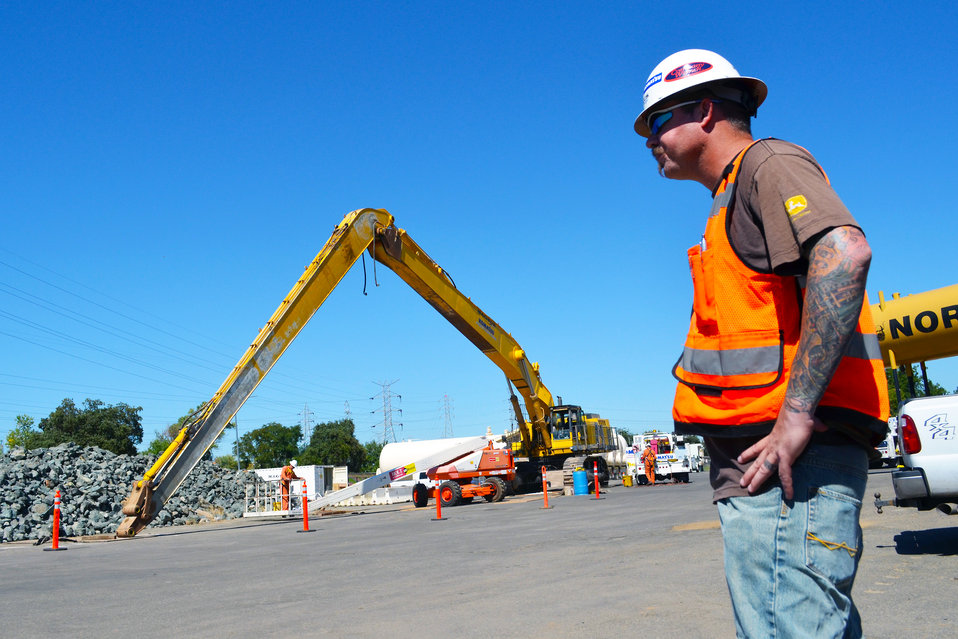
John Councilman prepares equipment to be used during nighttime construction

John Councilman, contractor for the U.S. Army Corps of Engineers Sacramento District, oversees final assembly of a custom-built excavator Aug. 28, 2012, for levee work underway along the American River in Sacramento, Calif. Crews are preparing to install a nearly 900-foot seepage cutoff wall, which is partly located under low-overhanging, high power lines. To accommodate the large levee equipment and minimize the impact to local residents, the power lines will be de-energized for the nighttime-only work scheduled from September 10-15. The work is part of a joint flood-risk reduction effort between the Corps, the state of California’s Central Valley Flood Protection Board and Sacramento Area Flood Control District.